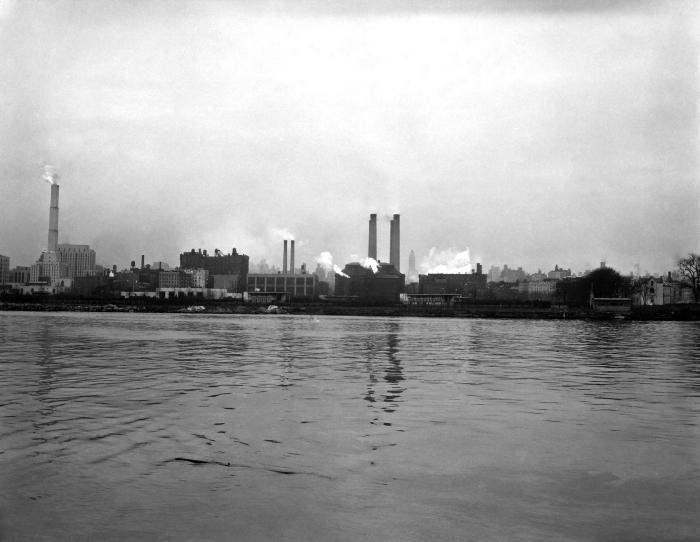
This historical 1946 image was captured during a U.S. Public Health Service (USPHS) field study, and depicted the air polluted waterfront landscape of an American city. Evidence such as this photograph helped to forge the rules and regulations to which industry must abide in order to stem the environmental damage created by industrial pollution. Now, industrial plant exhaust stacks are outfitted with filtration devices, which dramatically curtail the indiscriminant expulsion of air pollutants into the atmosphere.